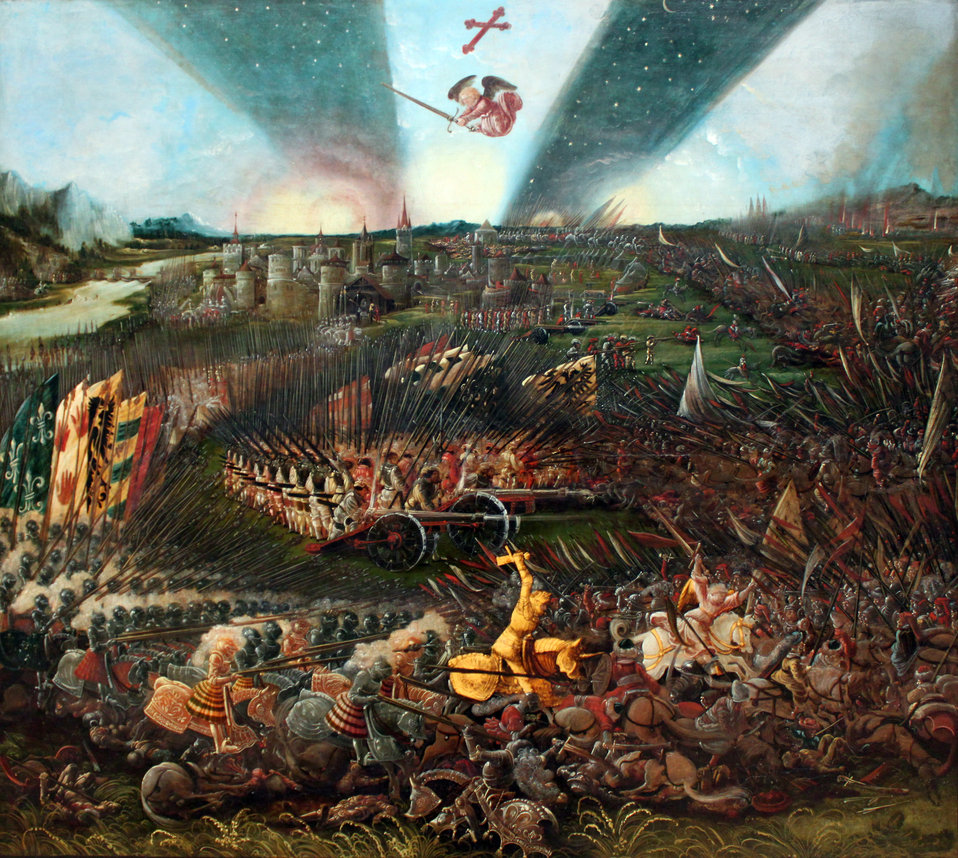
1518 Altdorfer Sieg Karls des Grossen ueber die Awaren anagoria